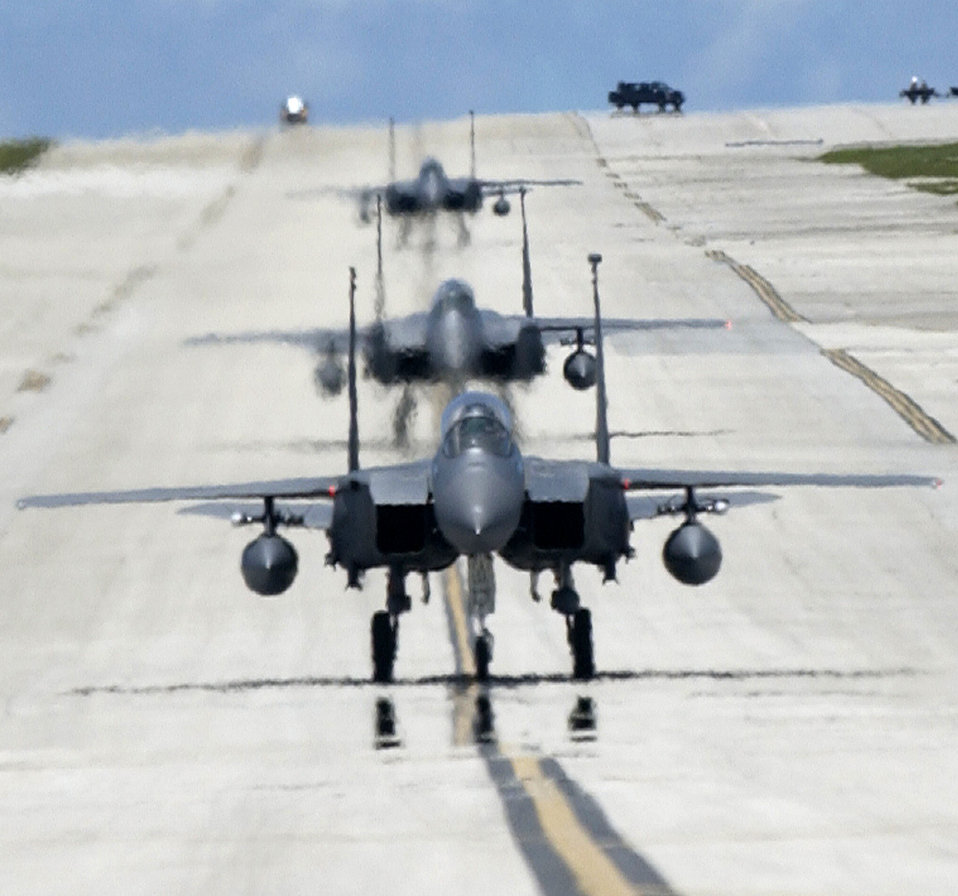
Strike Eagles stay sharp

F-15E Strike Eagles taxi at Andersen Air Force Base, Guam, after a training sortie on Monday, June 5. The Strike Eagles are here through September as part of an air expeditionary deployment.